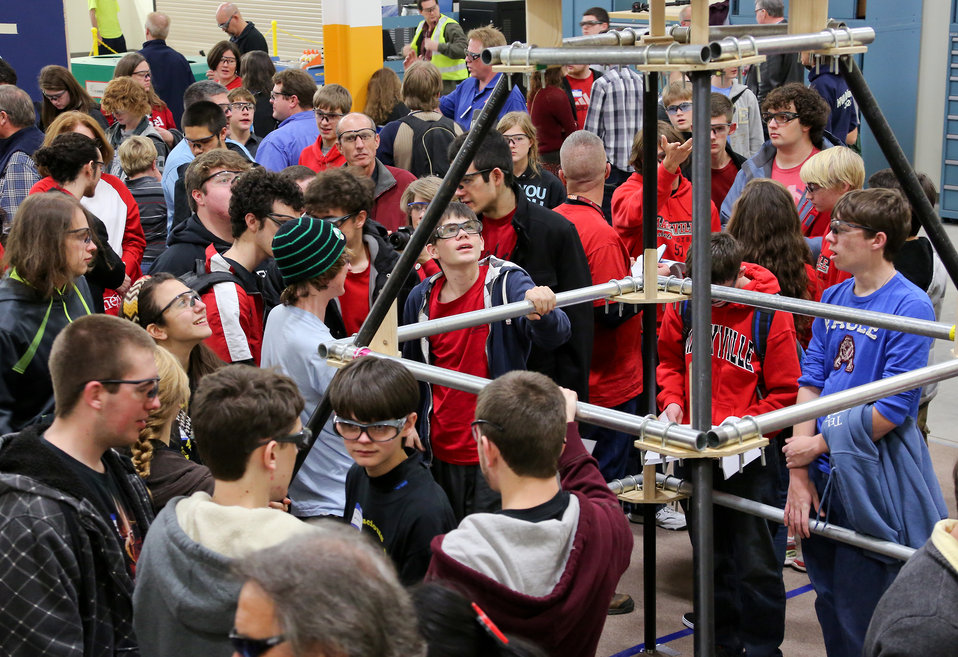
I, Robot Olympics

Last week, students from dozens of local Tennessee high schools gathered at Oak Ridge National Laboratory's Manufacturing Demonstration Facility to check out the game field that they'll be working with in the next six weeks. This year, the young engineers' challenges include building robots that can throw discs and climb pyramids.